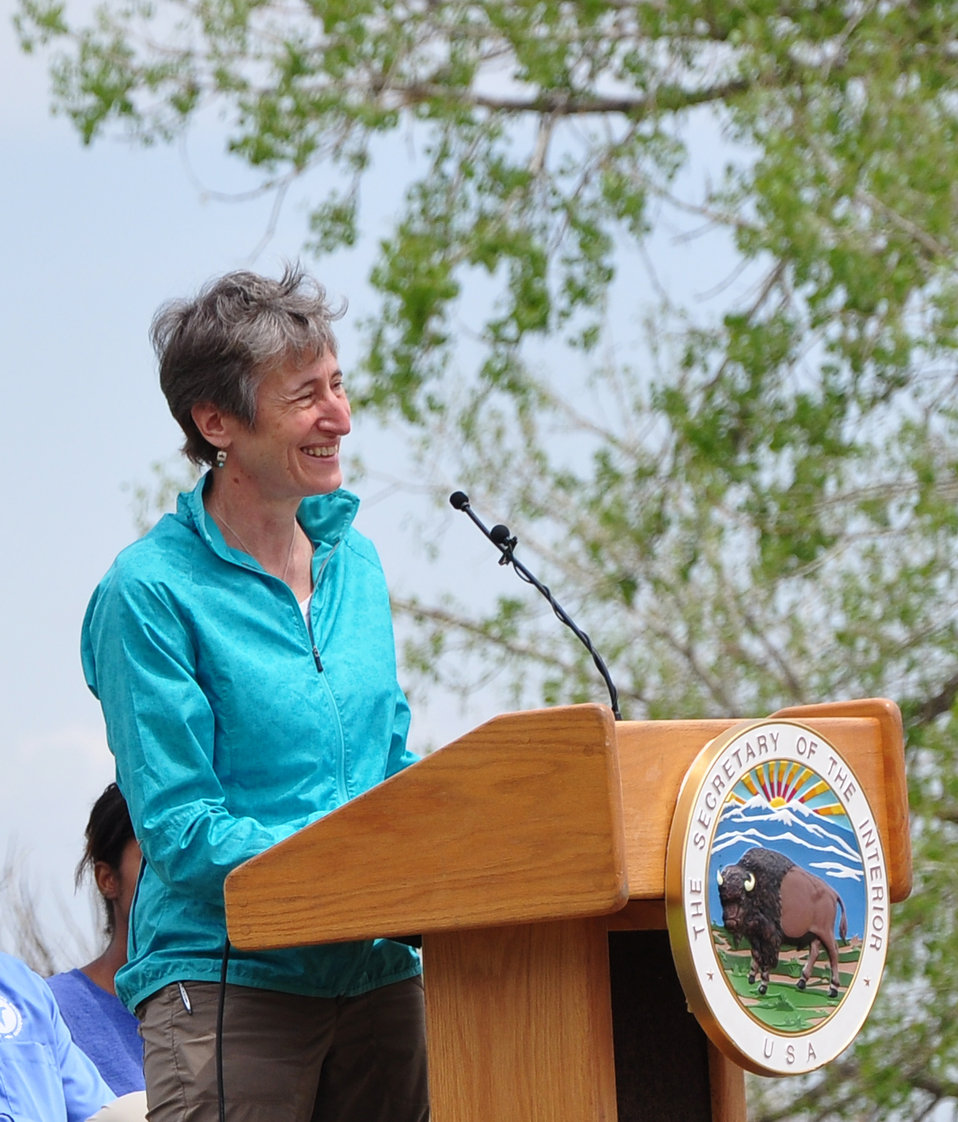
Secretary Jewell Announcing Funding for Youth Conservation Jobs